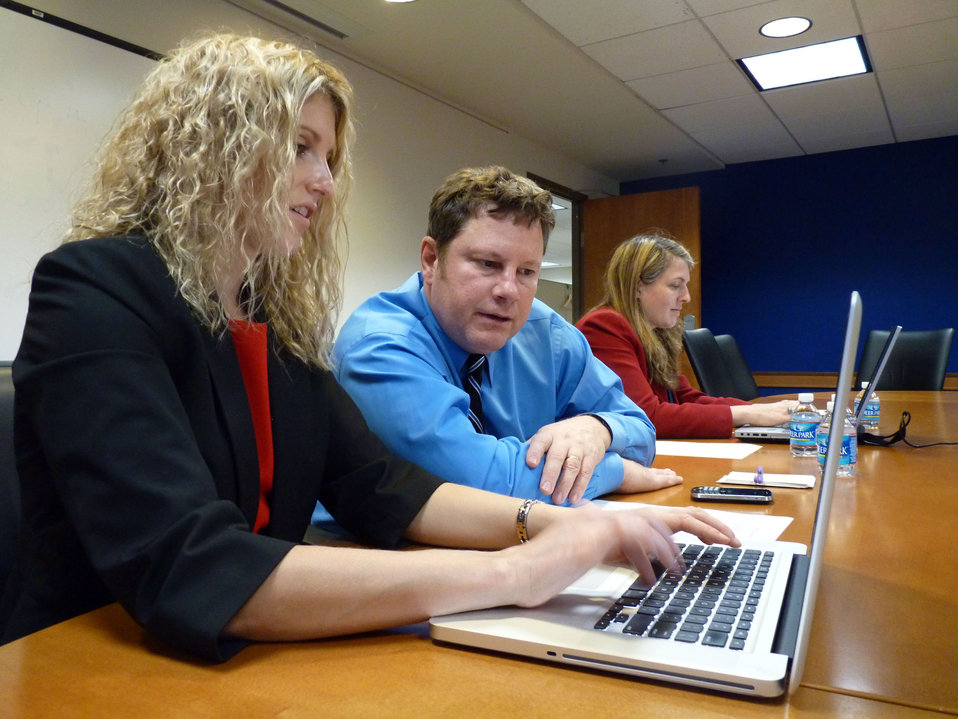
Assistant Secretary Hammer Participates in a Facebook Chat

Assistant Secretary of State for Public Affairs Mike Hammer participates in a Facebook chat at the U.S. Department of State in Washington, D.C., October 18, 2012.